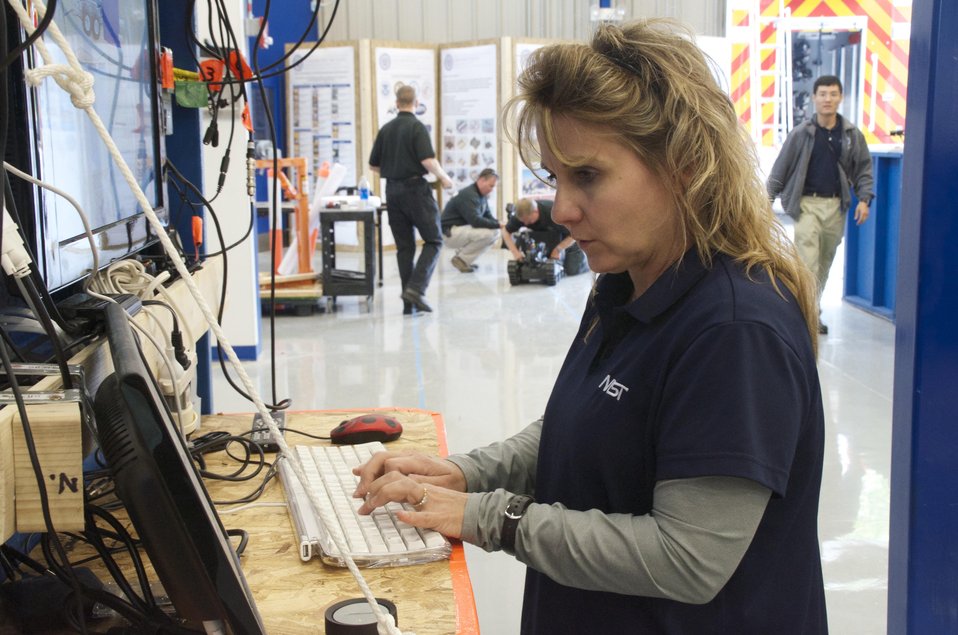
Ann Marie Virts - Robot Test Console

Ann Marie Virts, NIST technician and test method developer, syncs test data from one of the robot tests at the Robot Test Facility console.

Development of test methods at the NIST Robot Test Facility is funded in part by the NIST Office of Law Enforcement Standard's Counterterrorism and Response Technologies program.